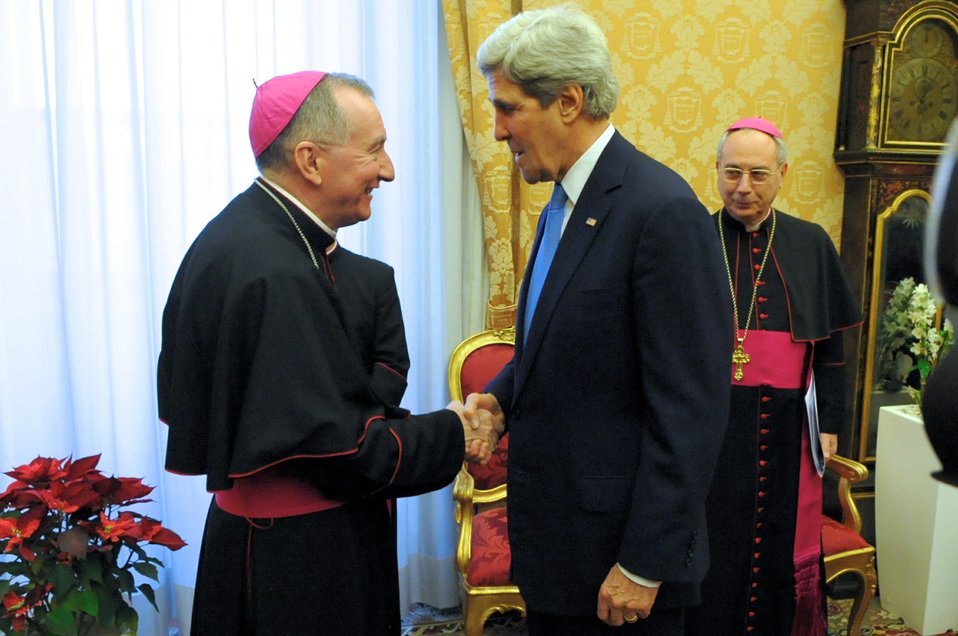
Secretary Kerry Meets With Vatican Secretary of State Parolin

U.S. Secretary of State John Kerry shakes hands with Vatican Secretary of State Pietro Parolin before a meeting in Vatican City on January 14, 2014.